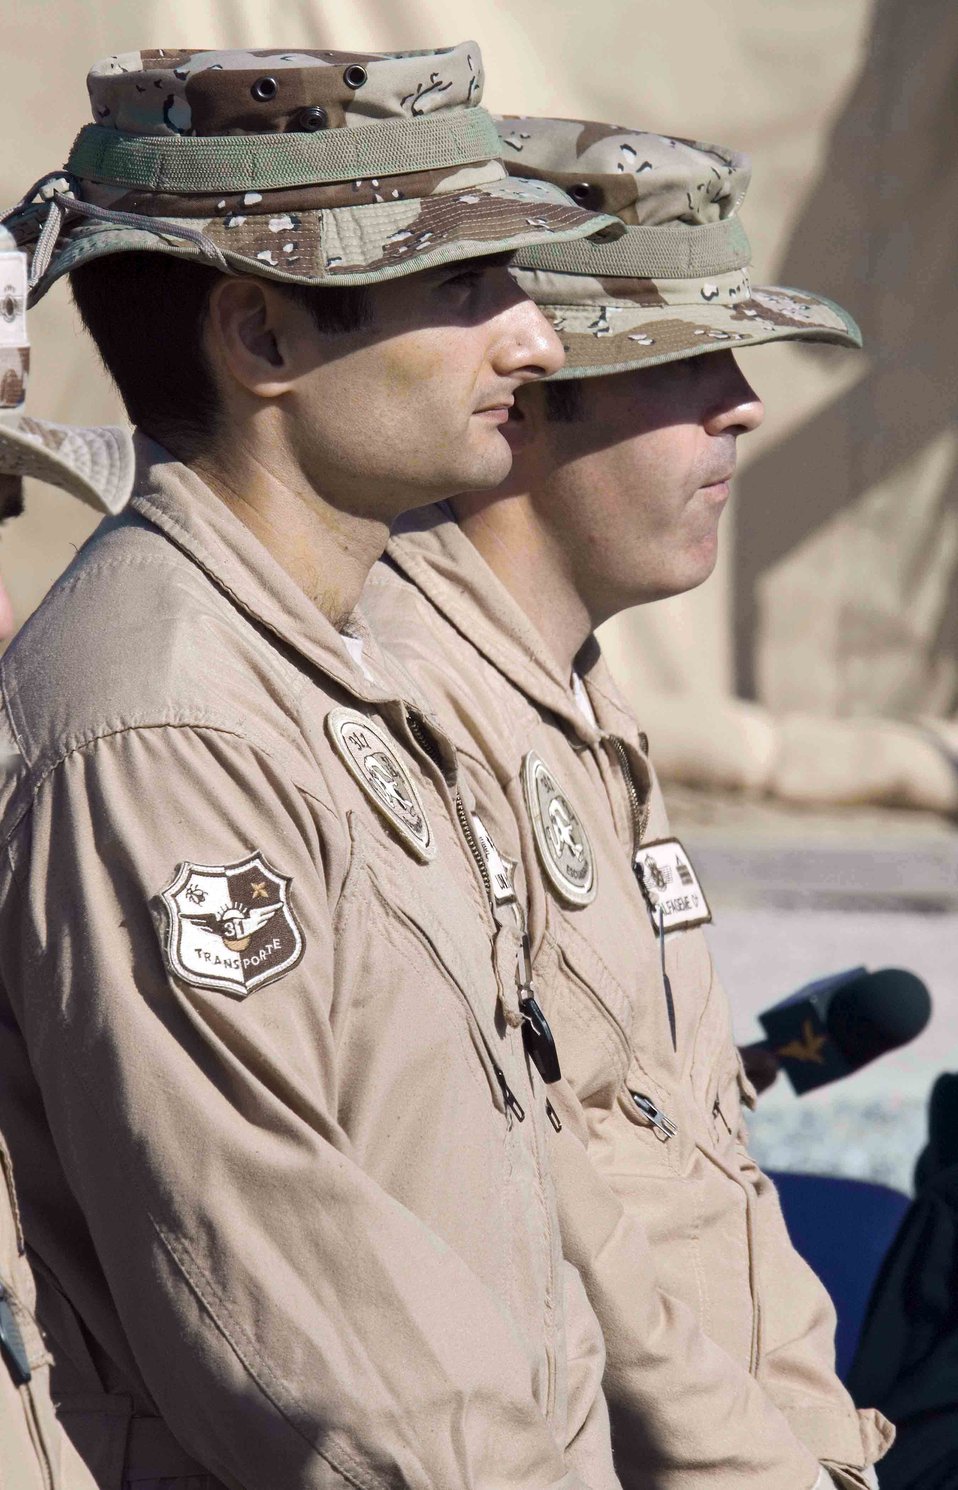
Manas Air Base hosts Kyrgyz president

Members of the Spanish detachment at Manas Air Base, Kyrgyzstan, take a moment to reflect during a remembrance ceremony Sept. 11. Members from the 376th Air Expeditionary Wing, French and Kyrgyz militaries also participated in the event.